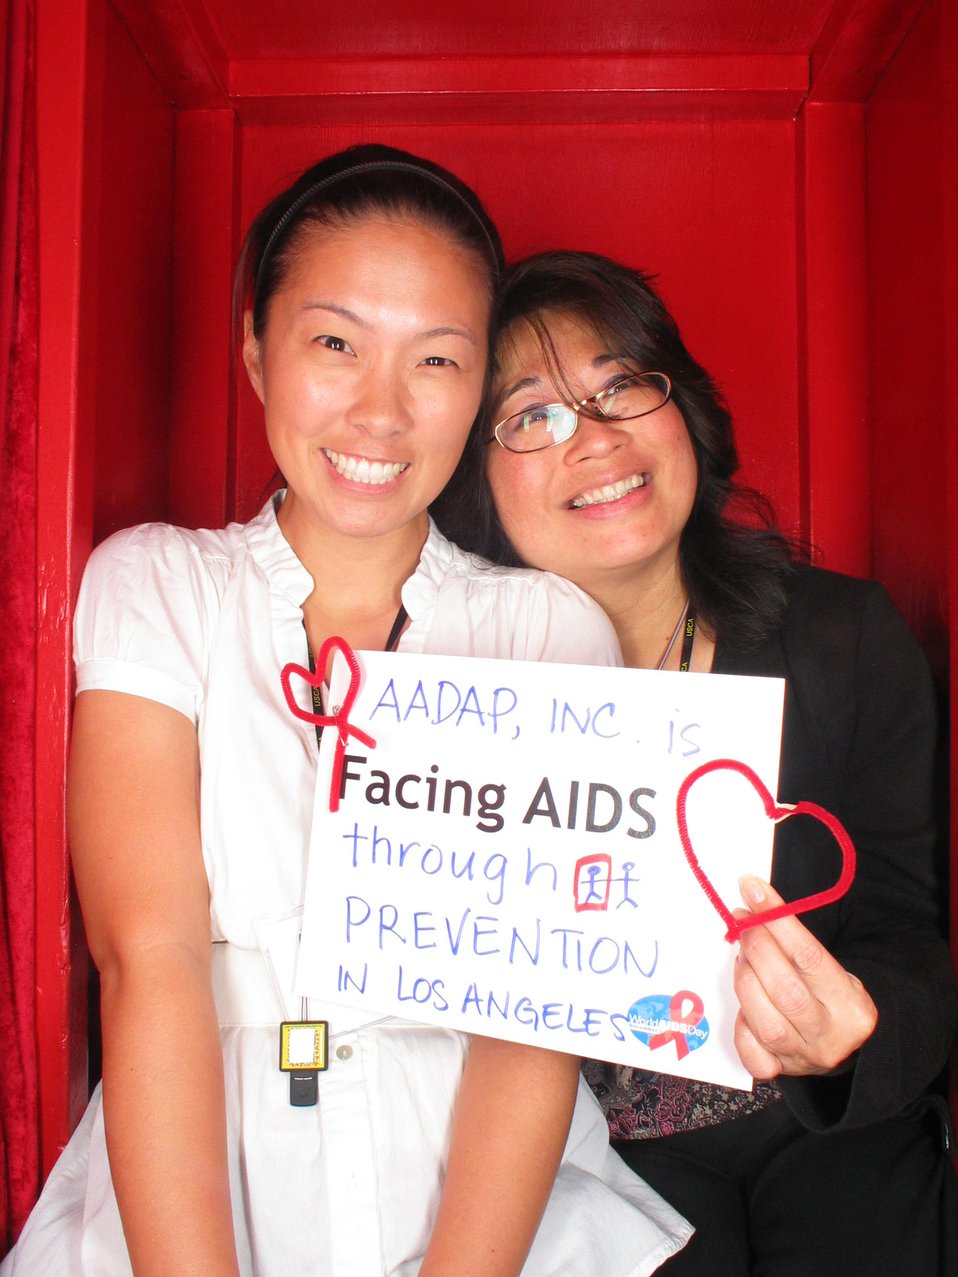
AADAP, Inc is Facing AIDS through prevention in Los Angeles